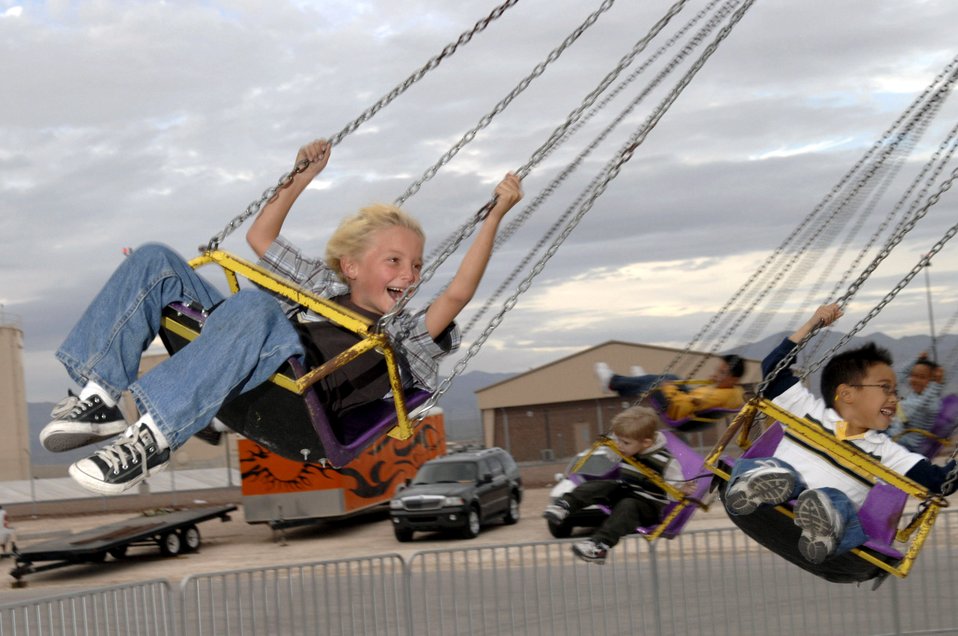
It's an aviation nation

Jarod Worsley (left) enjoys a carnival ride during the Aviation Nation Air Show Nov. 11 at Nellis Air Force Base, Nev. Aviation Nation is one of the largest air shows in North America. This year's show commemorated 60 years of airpower and was the capstone event of the Air Force's yearlong 60th anniversary celebration.